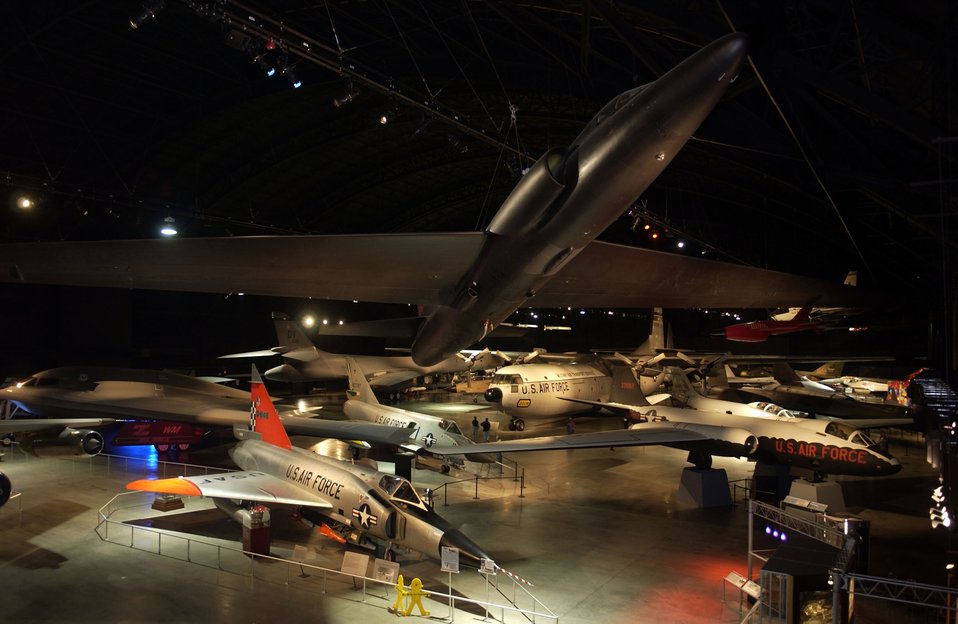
Gallery

WRIGHT-PATTERSON AIR FORCE BASE, Ohio -- The Cold War Gallery at the National Museum of the United States Air Force shows a variety of cold war-era aircraft and equipment.